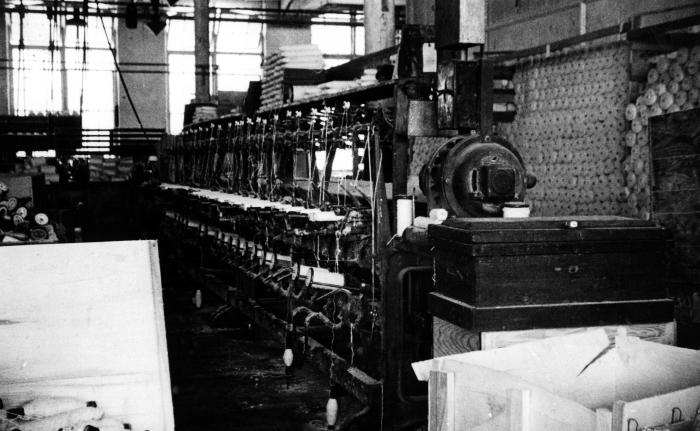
This historical image was provided by the Center for Disease Control's (CDC), National Institute for Occupational Safety and Health (NIOSH). Inside an asbestos mill, the photograph depicted an asbestos thread-making machine, which produced the large spools of asbestos thread seen here in production. Asbestos has been found to be the cause of long-standing, chronic respiratory illnesses such as mesothelioma. When airborne fibers are inhaled, they become permanently deposited in the lungs. These fibers are extremely sharp, ensuring their pulmonary permanency. These particulates initiate a chronic inflammatory response inside the lungs, and subsequently can lead to mesothelioma, a malignant form of lung cancer affecting the lining of the pulmonary cavity and lung exterior.